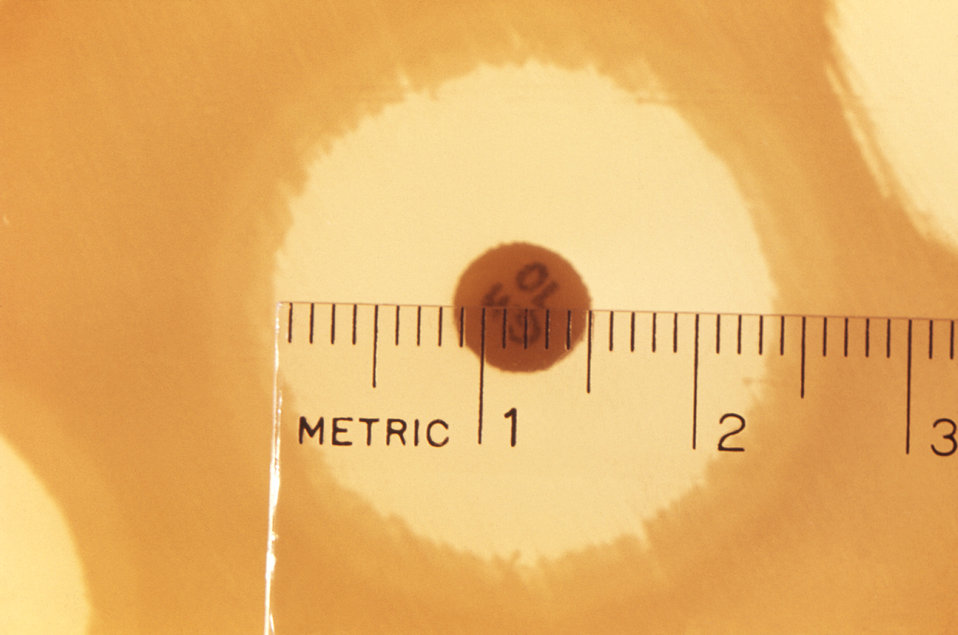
This 1972 image depicted a Mueller-Hinton agar culture plate that had been used in an antibiotic susceptibility test (AST). Known as the Kirby-Bauer method, each of the small labeled discs, or wafers, contained an antibiotic cocktail. This image is an enlarged view of a region of PHIL 10784. The light halos surrounding each disc, also known as 'reaction zones', represented regions in which the bacteria on the agar's surface did not thrive, due to their sensitivity to the antibiotic that had been soaked into these respective discs.